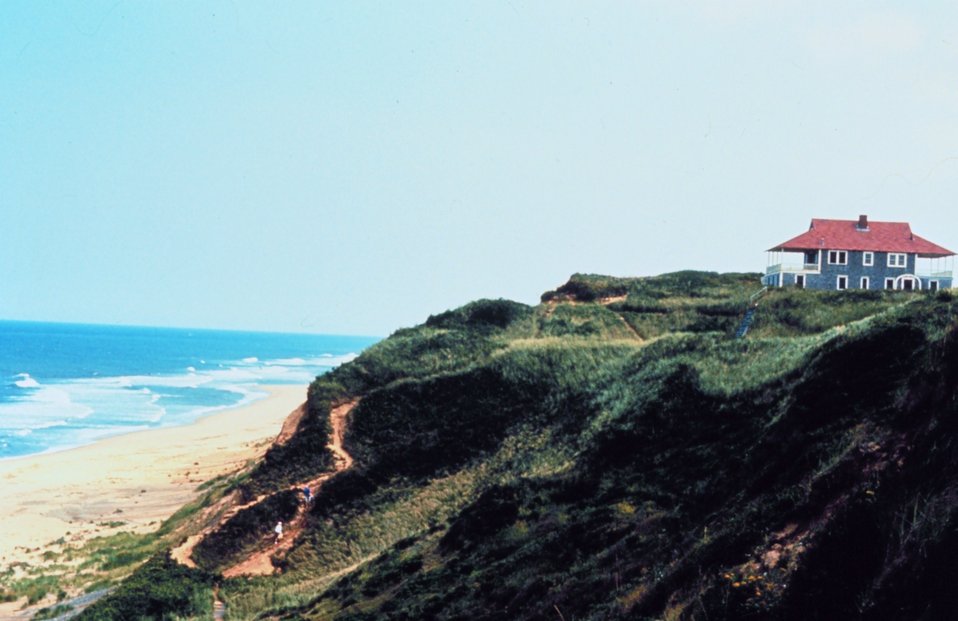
A deserted beach